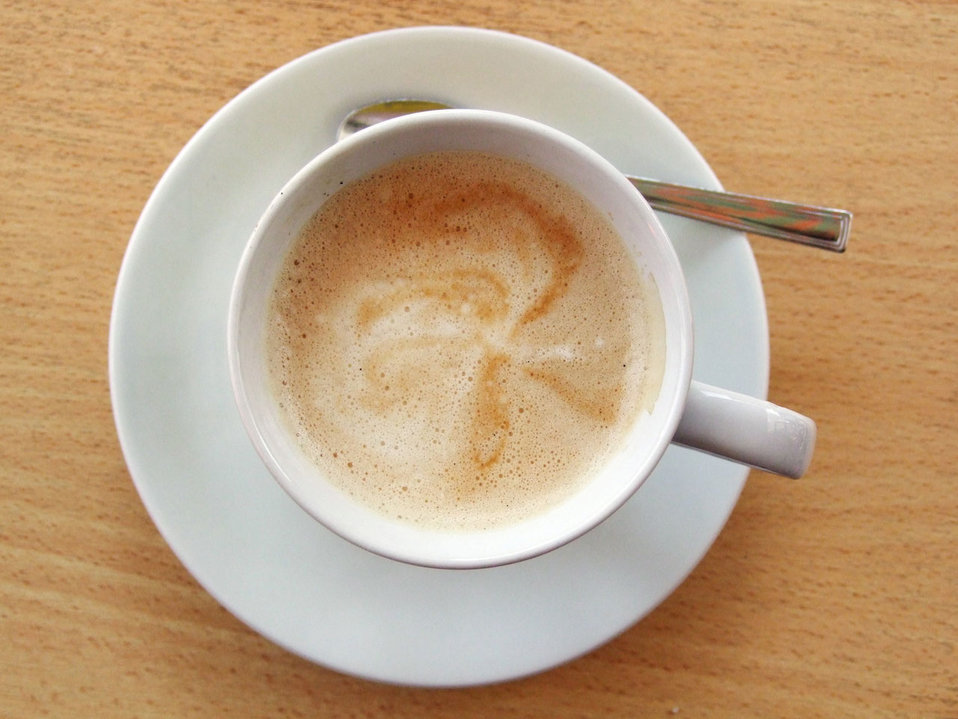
Cup of coffee

With lover, friend, child makes any moment beautifull.